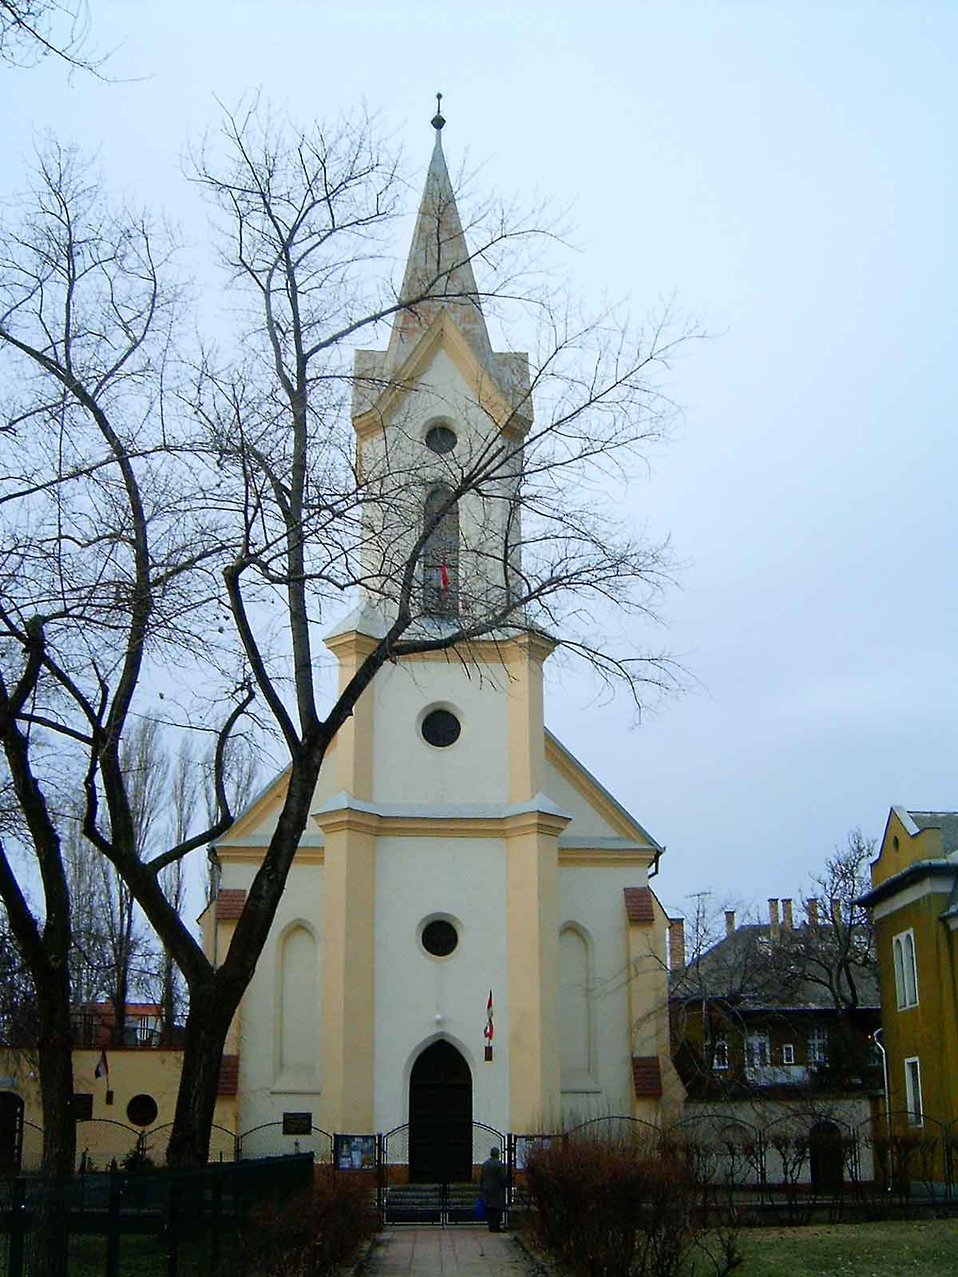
Magyar: Kispesti Központi Református Templom Deutsch: Reformierte Kirche Kispest (19. Bezirk in Budapest) Reformed church in Kispest (19th district in Budapest)